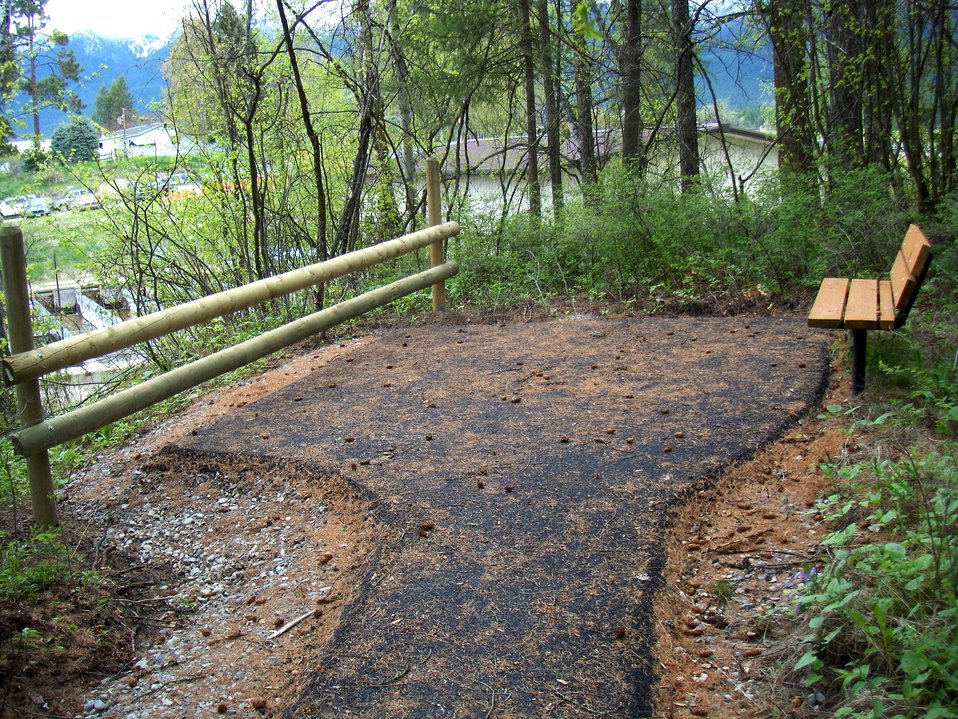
Creston National Fish Hatchery's Nature Trail Overlooking Mill Creek

Creston National Fish Hatchery provides many Educational Opportunities for area schools and families.